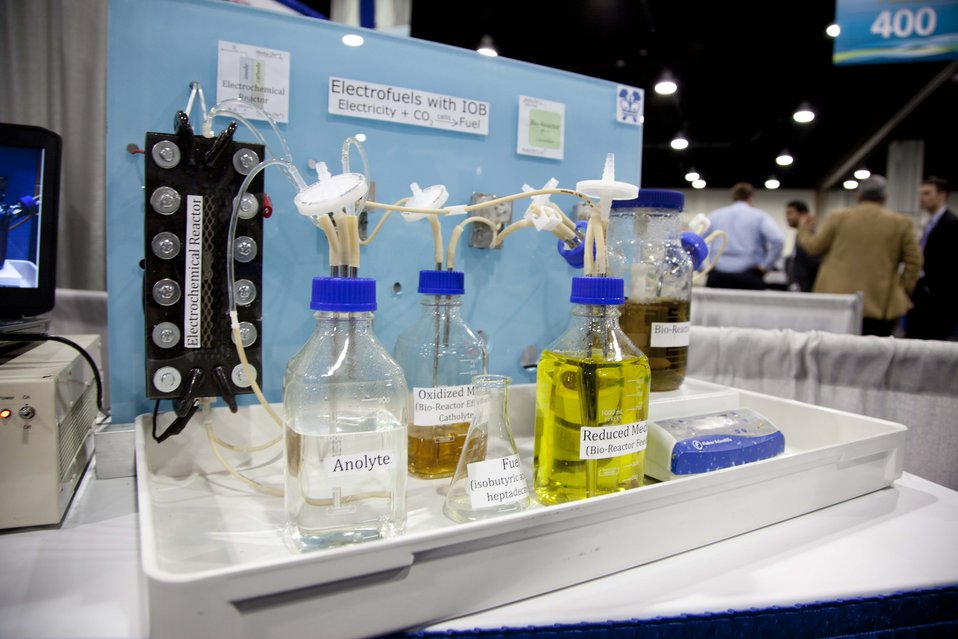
ARPA-E awardee Columbia University demonstrates their innovative approach to producing isobutanol – a high performance biofuel. The project team combines an electrochemical and biological reactor to convert water, C02 and electricity into clean, renewable fuel.